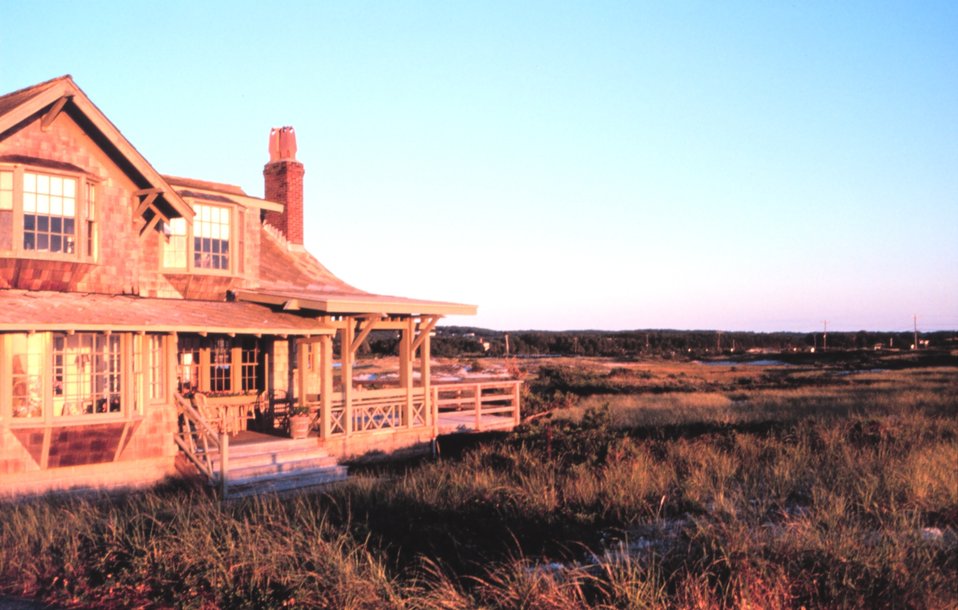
Chapaquoit Beach, West Falmouth